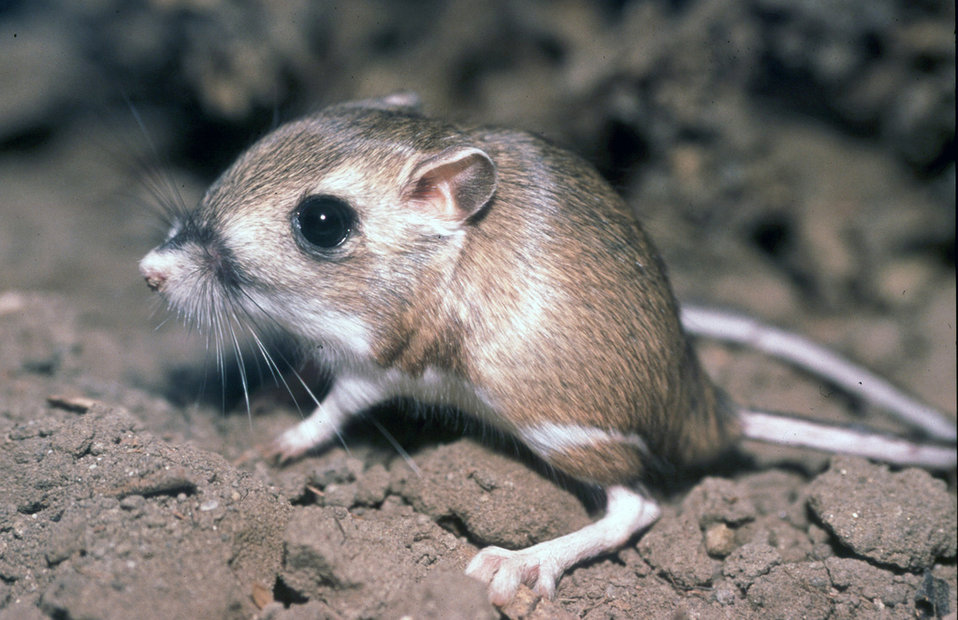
Tipton kangaroo rat

endangered
Kern National Wildlife Refuge, CA